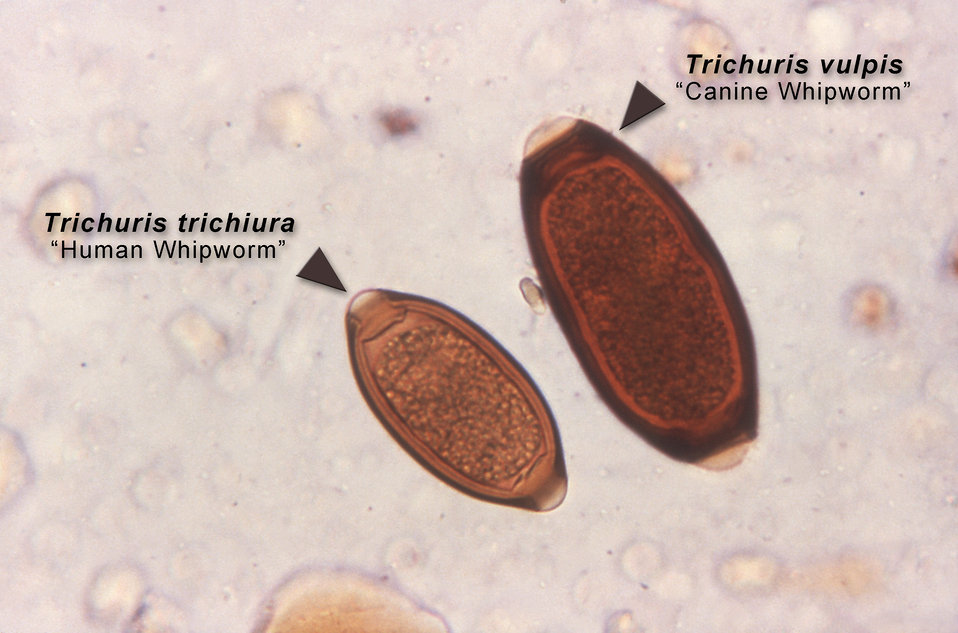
Under a high magnification, this micrograph depicts both, an egg from the 'human whipworm', Trichuris trichiura (Lt), the causal agent of 'Trichuriasis', and the 'dog whipworm', T. vulpis (Rt). Morphologically, T. vulpis ova resemble those of T. trichiura, but as is clearly visible here, are nearly twice their size.